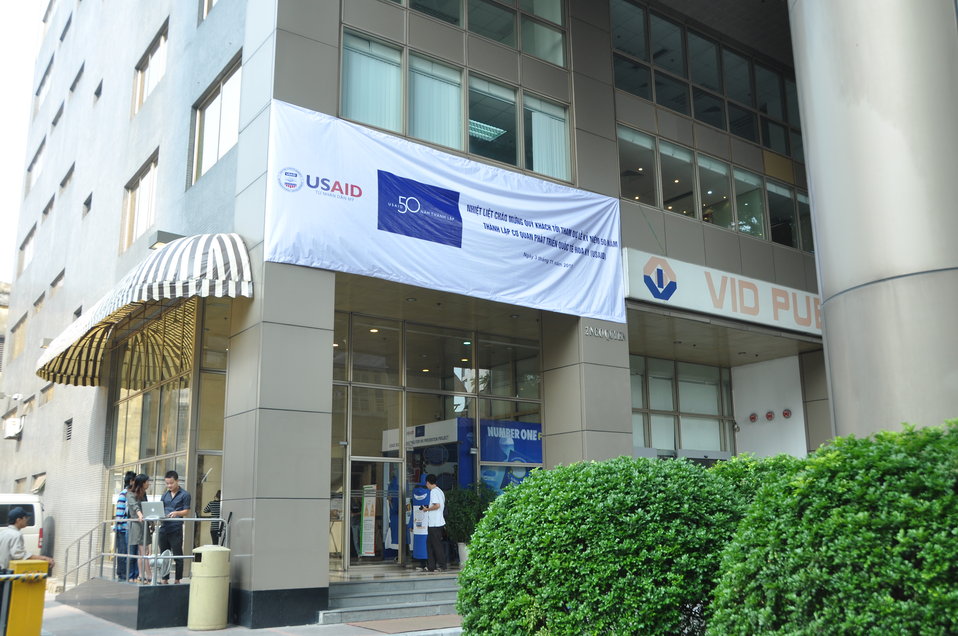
USAID 50th Anniversary Open House, USAID Vietnam